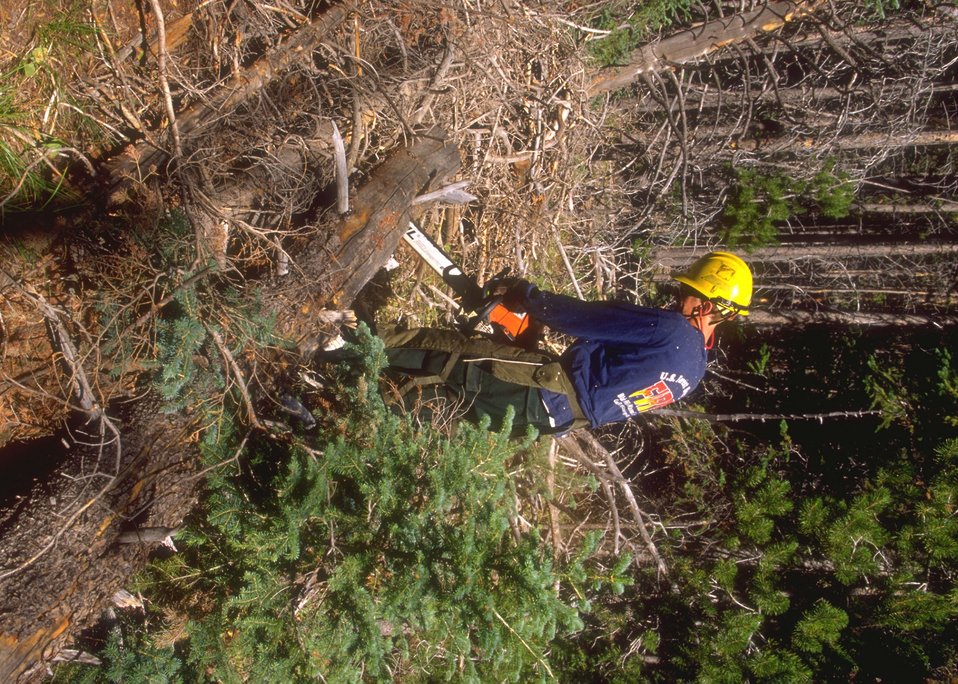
Fuels reduction management in progress at Muddy Mountain Recreation Area, Casper Field Office.